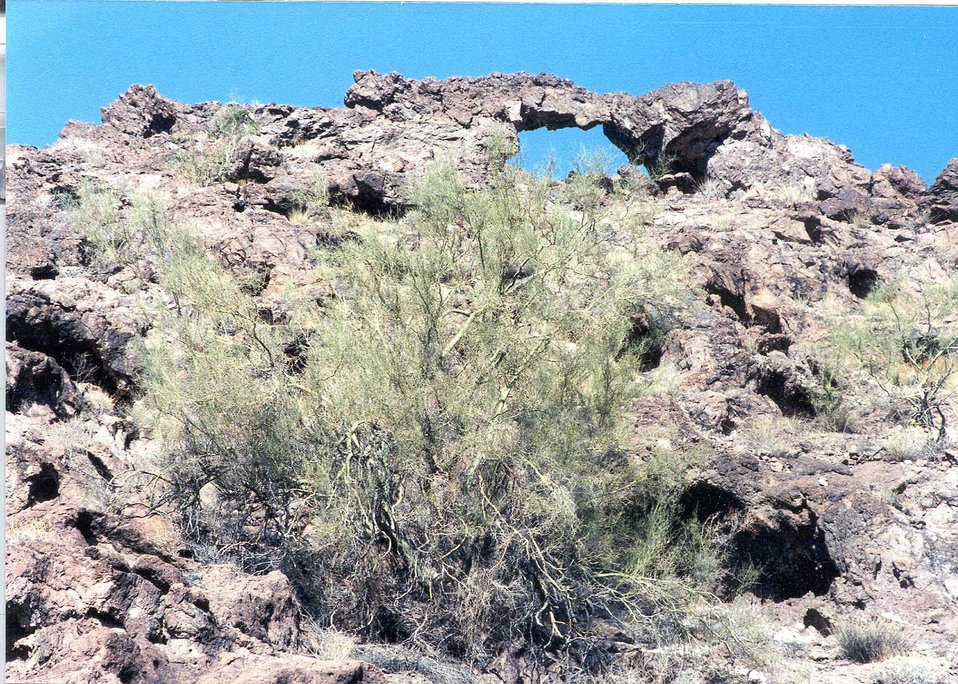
Arched rock in Trigos Wilderness Area